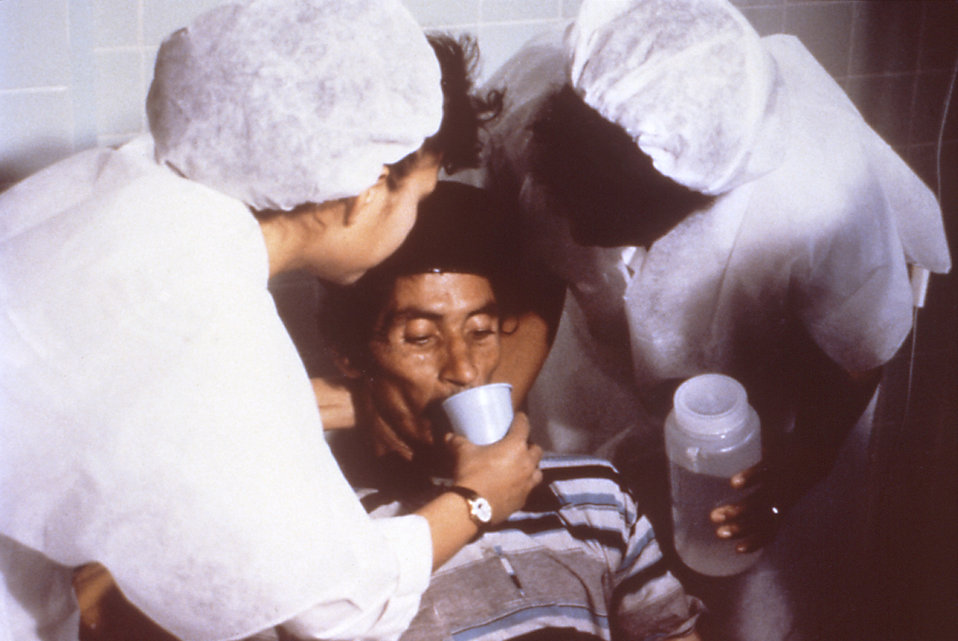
This cholera patient is drinking oral rehydration solution (ORS) in order to counteract his cholera-induced dehydration.